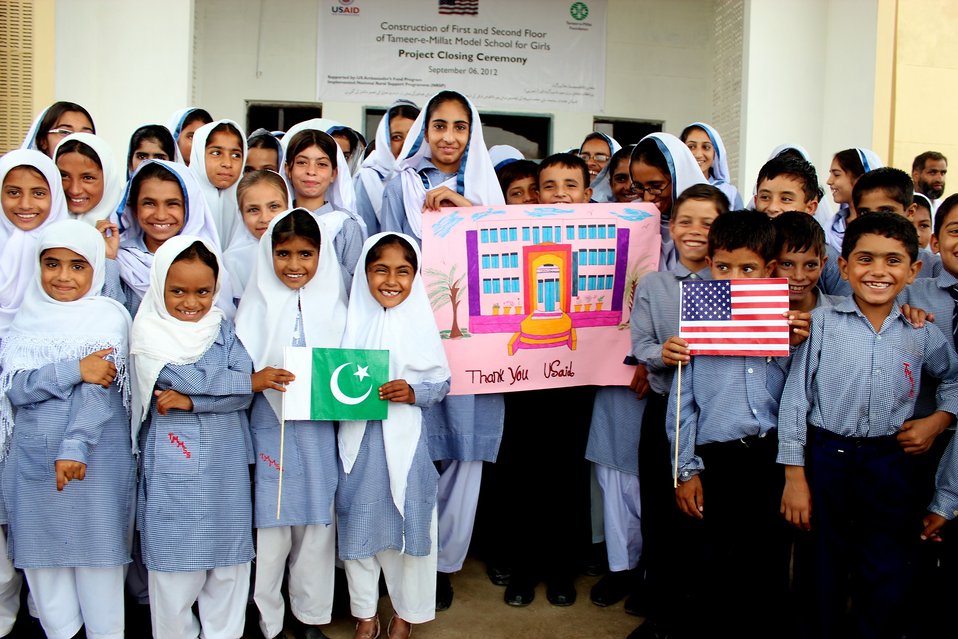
School children pose with a thank you card for USAID

Sept 06, 2012 : Construction (first and second floor) of Tameer-e-Millat Model School for Girls (TMMSG) in village Latwal, of Tehsil Fateh Jhang has been completed and on Sept 06, 2012 Project closing and School opening ceremony was held in which students, teachers, parents and community leaders participated.